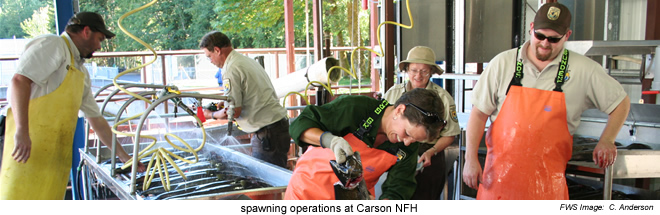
Spawning operations - Carson NFH